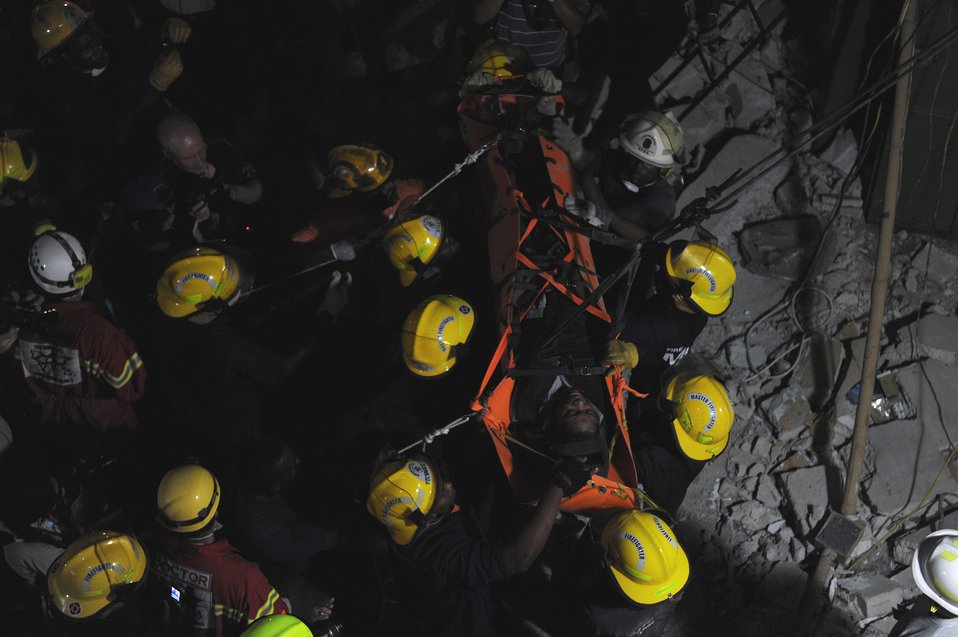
AFSOC pararescuemen work to save lives

Members of various rescue teams, including U.S. Air Force pararescuemen from the 23rd Special Tactics Squadron at Pope Air Force Base, N.C., lower a 25-year-old woman after freeing her from a space in a collapsed building Jan. 19, 2010, in Port-au-Prince, Haiti. The woman was trapped for seven days.